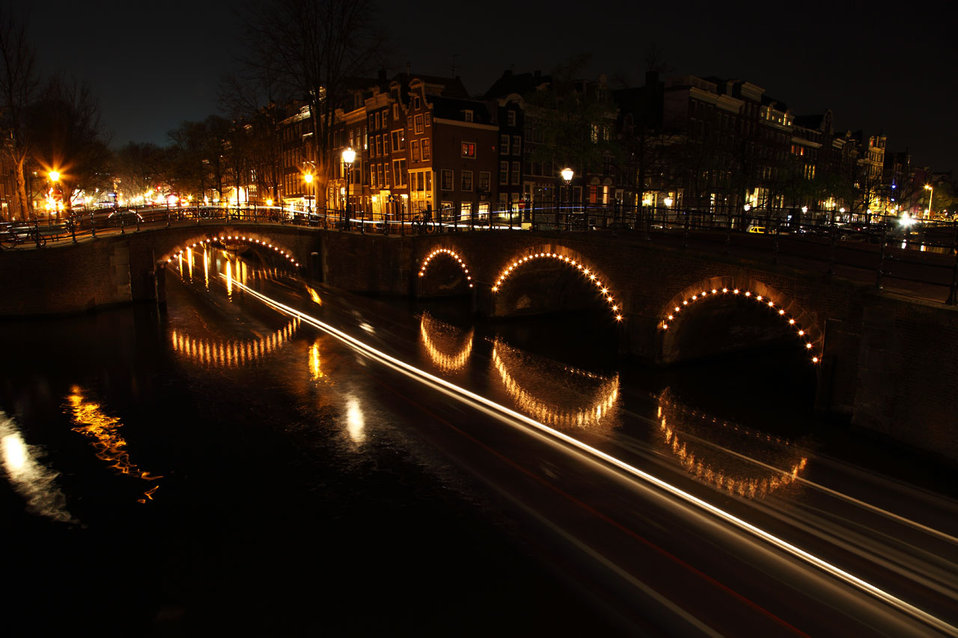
Illuminated bridges with passing boat at night in amsterdam.